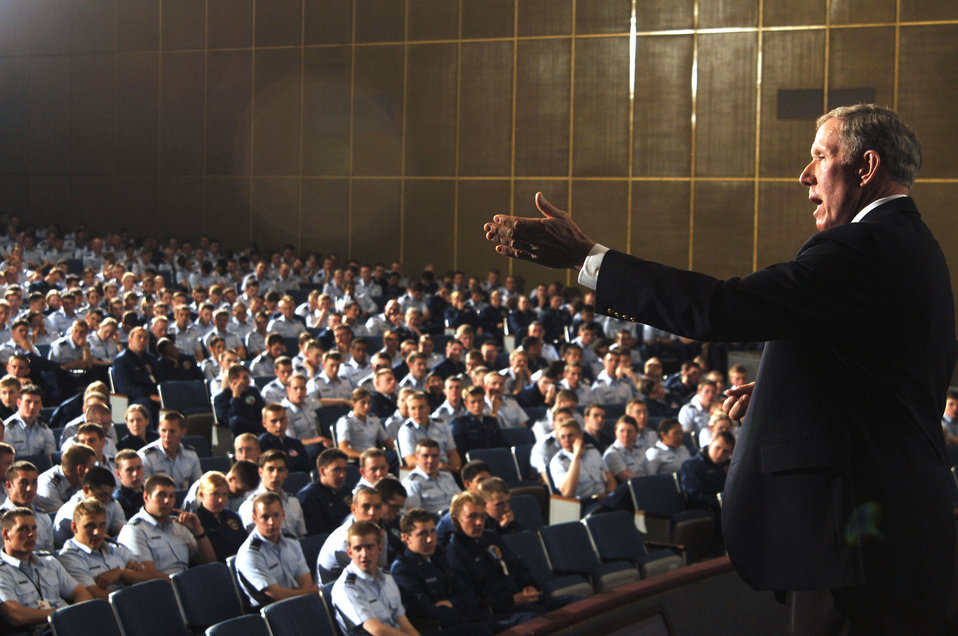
Life at the academy

Retired Navy Cmdr. William Driscoll briefs freshman and sophomore cadets in Arnold Hall during the Academy Cadet Wing Unit Compliance Inspection in April at the U.S. Air Force Academy.